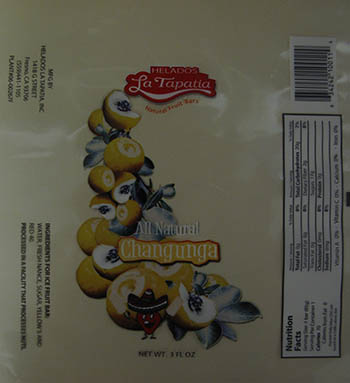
RECALLED – Ice cream products

March 19, 2014 – Product Recall – Helados La Tapatia, Inc. Recalls Products Because of Possible Health Risk.